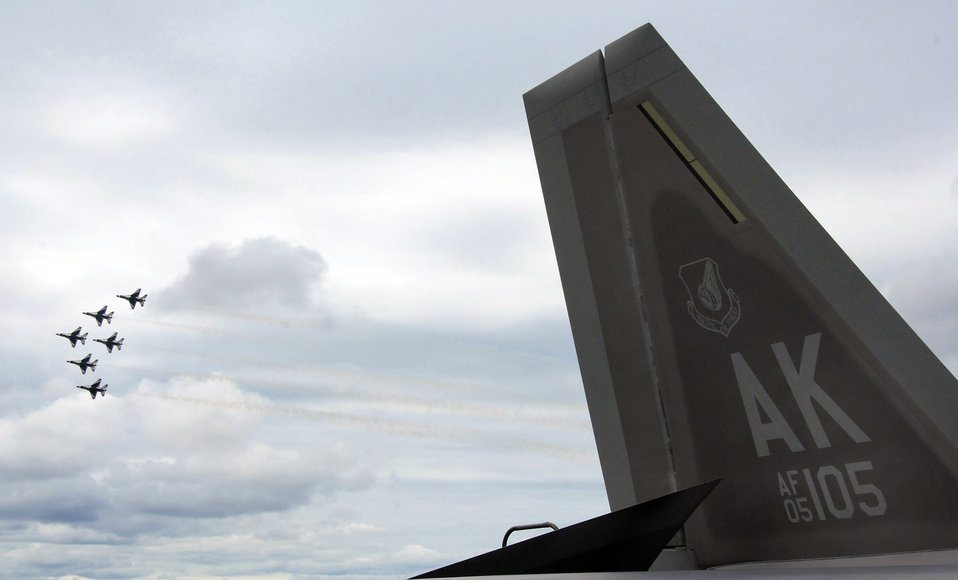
Thunderbirds 'Soar into Solstice' at Eielson

Six Air Force Thunderbird F-16 Fighting Falcons fly together in formation behind the F-22 Raptor for more than 6,000 spectators during the June 24 airshow at Eielson Air Force Base Alaska. The